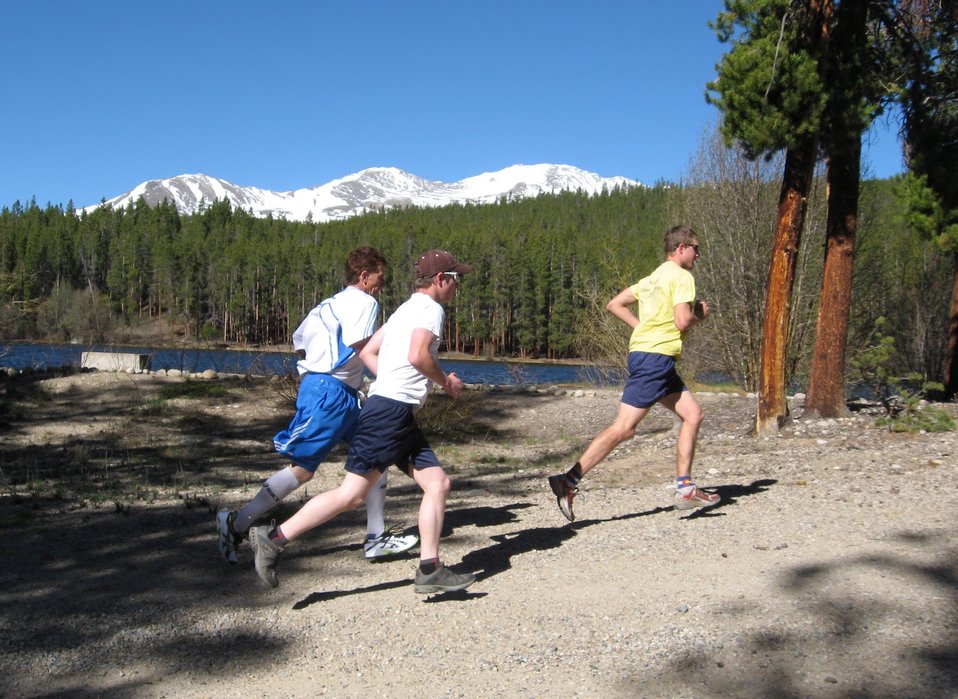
Leadville National Fish Hatchery 5K

Three runners participating in the Leadville National Fish Hatchery 5K which is held each year during the first weekend in June. This race usually draws between 80-100 runners each year.